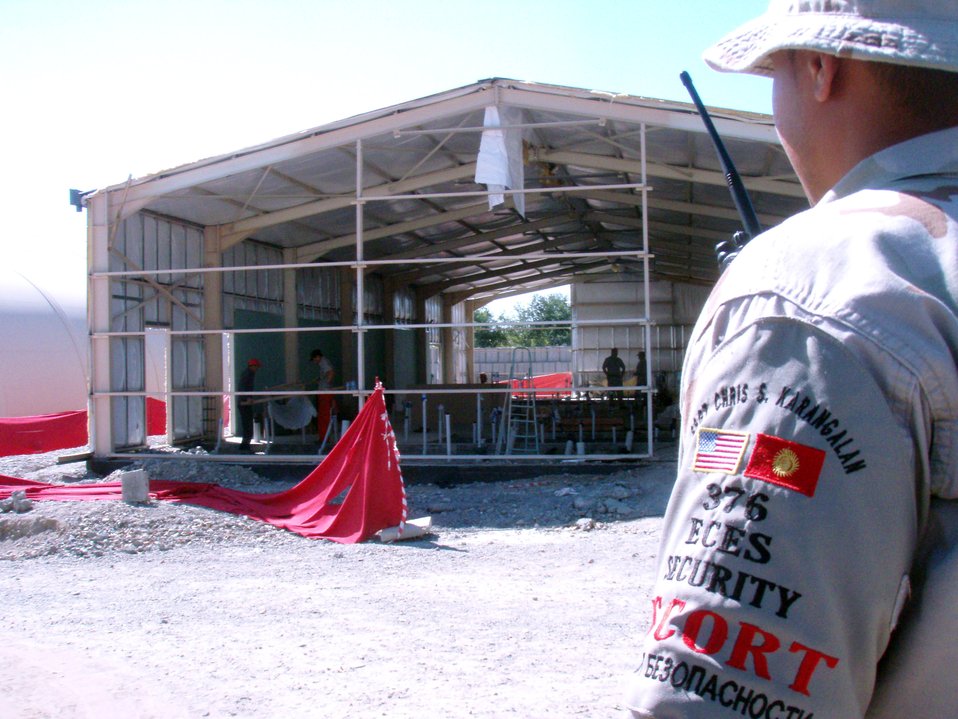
Security escorts accomplish vital mission

Staff Sgt. Chris Karangalan watches over workers at a construction site Aug. 29 on Manas Air Base, Kyrgyzstan. Sergeant Karangalan is with the 376th Expeditionary Civil Engineering Squadron's Security Escort Flight. Sergeant Karangalan is deployed from Edwards Air Force Base, Calif.